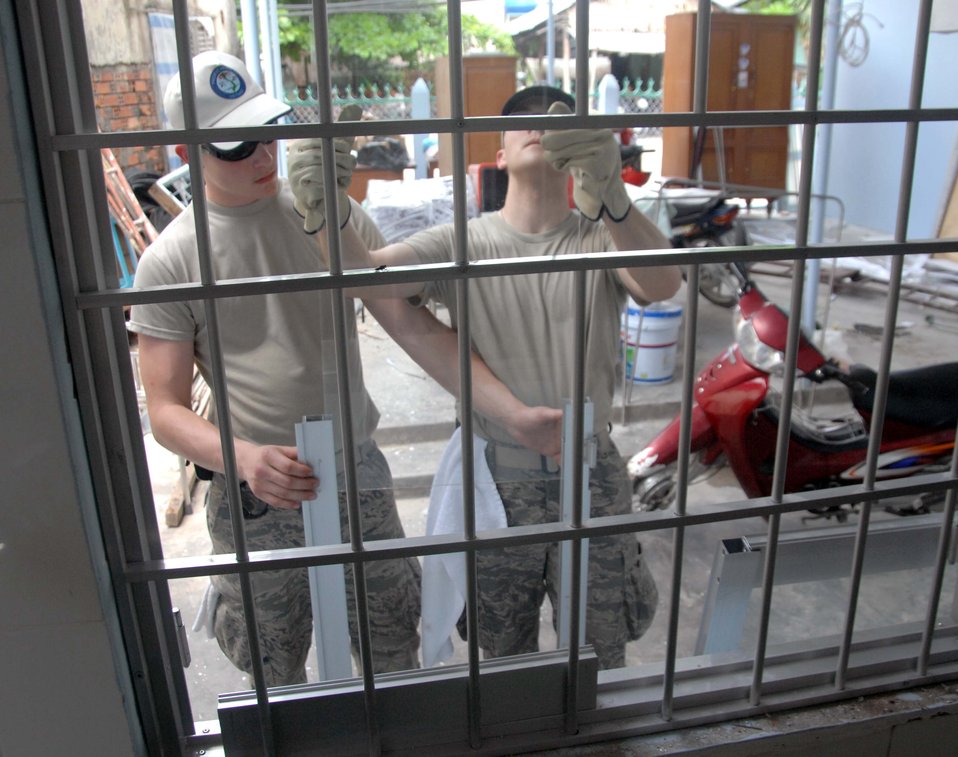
U.S., Vietnam building great relationships says U.S. Consul General

Civil engineers install new windows at the village medical clinic in Truong Thanh, Vietnam, as part of Pacific Angel 10-2.